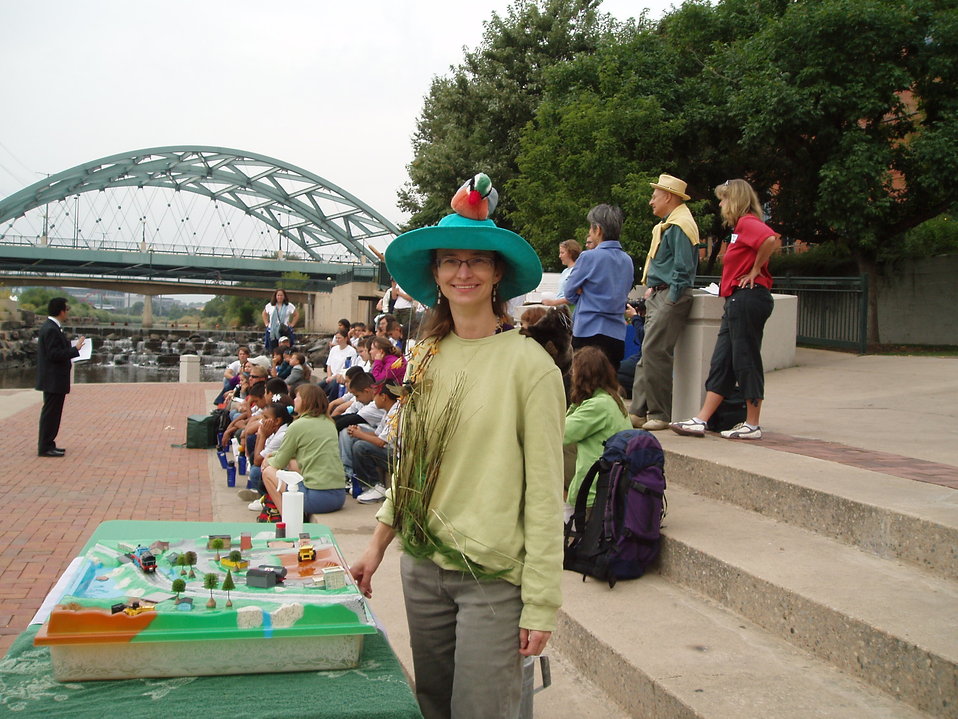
EPA Volunteer Dressed up as a Wetland on World Water Monitoring Day

Students learned about their local watershed and pollution prevention from an EPA watershed specialist, who is also dressed up as a wetland! Students saw an example of how pollutants can enter the watershed via different avenues such as pesticides and spills. Students were also reminded to pick up after their pets to prevent pollution from entering the waterways.